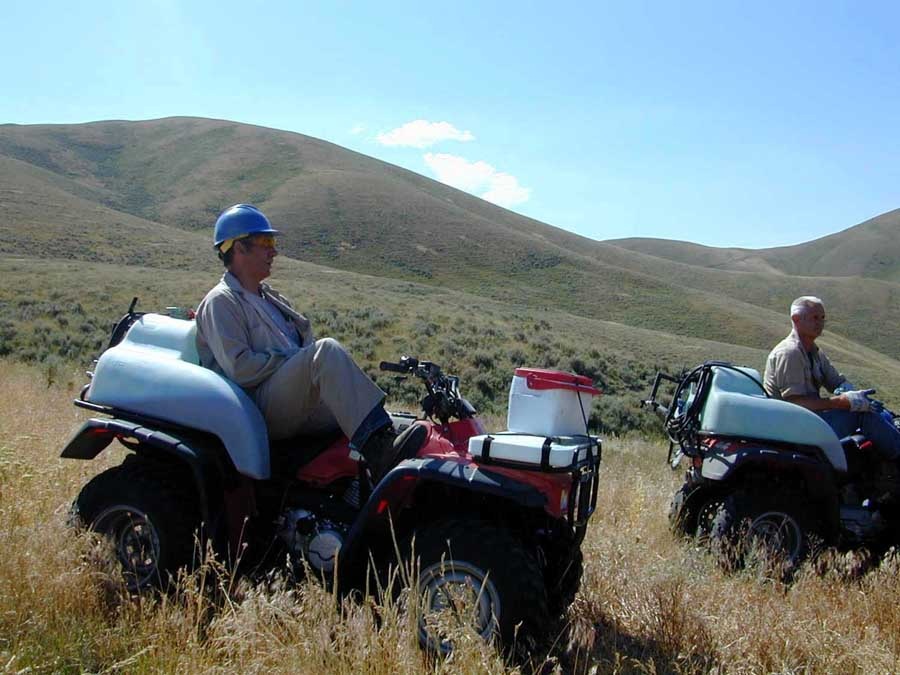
Spraying Leafy Spurge with a red dye Idaho vegetation Plants in BLM